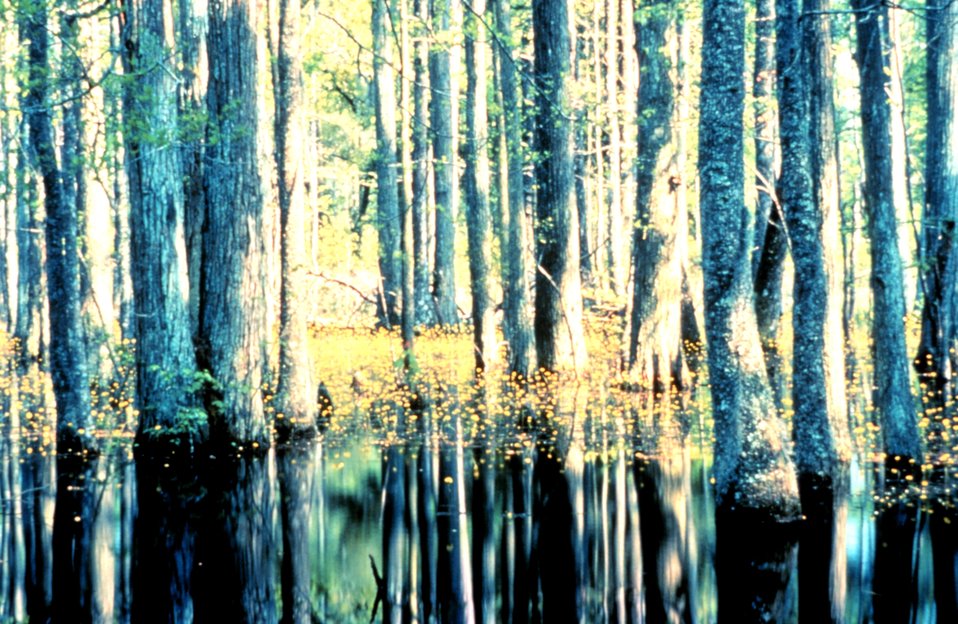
ACE Basin National Estuarine Research Reserve. Forested wetland.